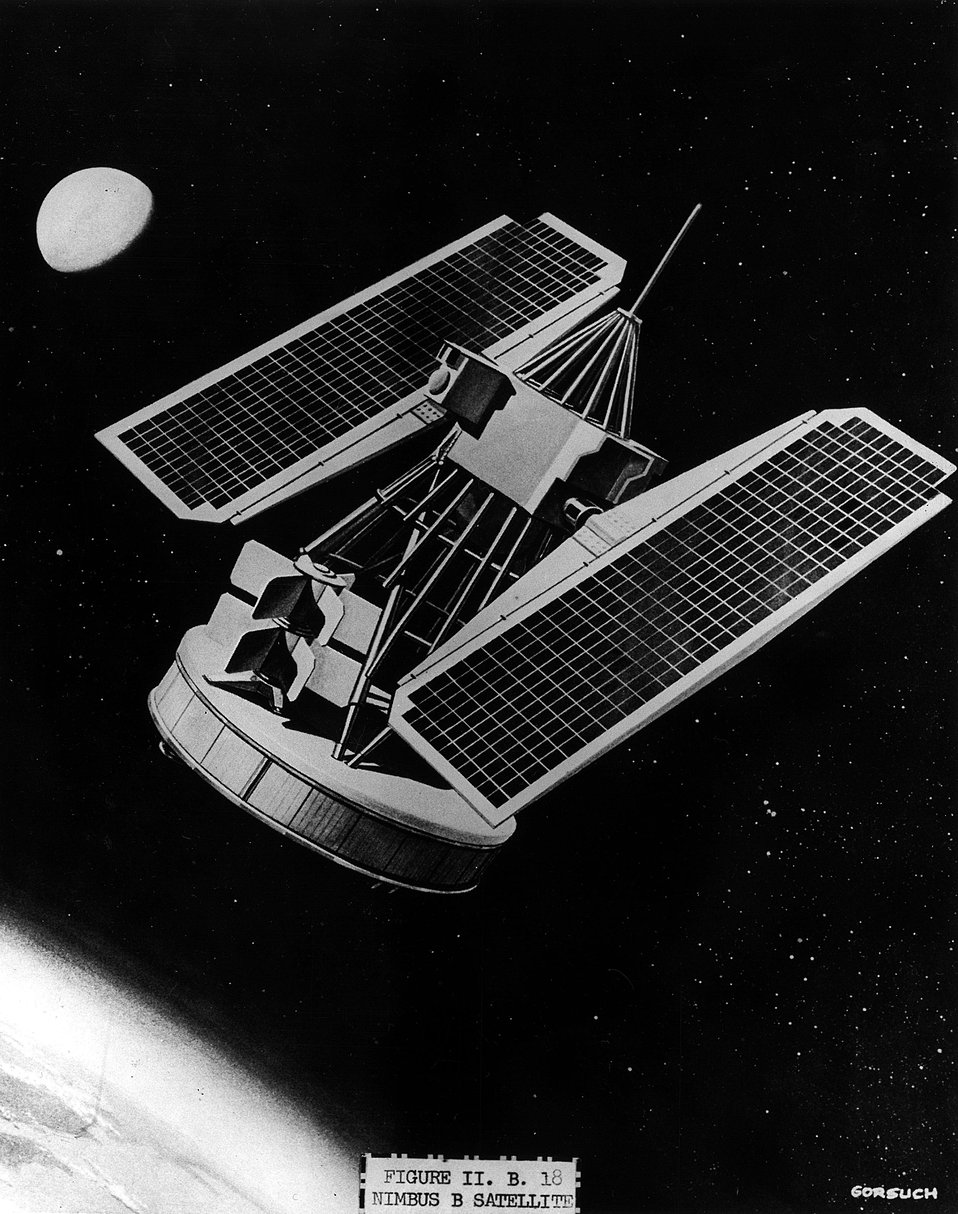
Two SNAP-19 radioisotope thermometric generators (atomic batteries) are shown mounted in tandem between two solar cell paddles in artist's drawing of NASA's Nimbus-B weather satellite.